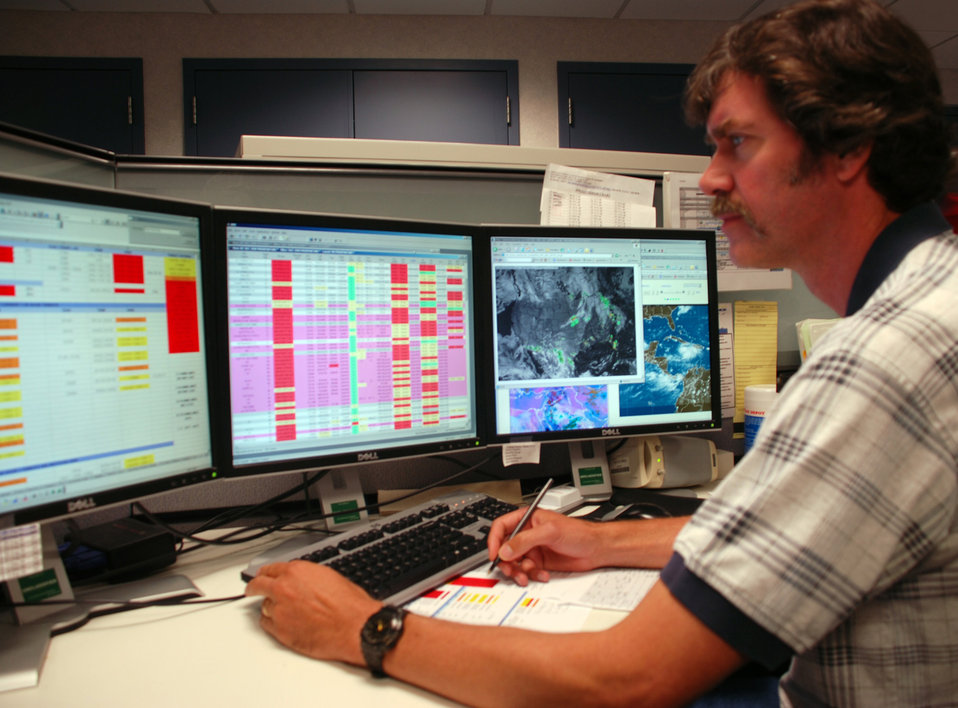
Hurricane Gustav response

In this Aug. 28, 2008, photo, Shawn Dahl, a meteorologist with the 618th Tanker Airlift Control Center Weather Cell at Scott Air Force Base, Ill., keeps an eye on the satellite picture that shows the location of Hurricane Gustav.